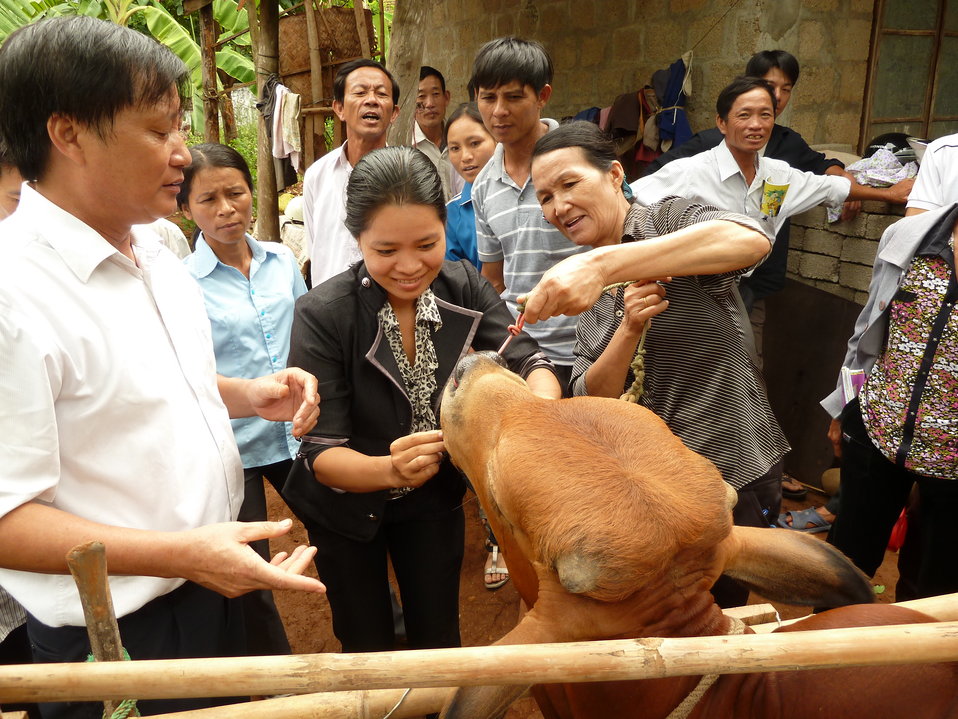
Animal health worker training in Quang Tri Province